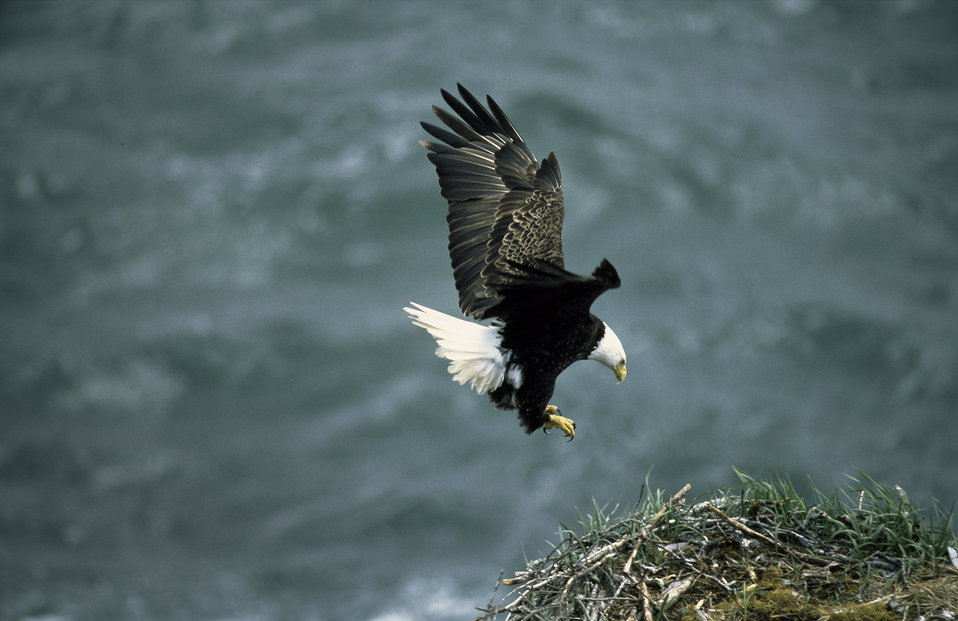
Bald eagle in flight

A Bald Eagle in flight just before landing at the Kodiak National Wildlife Refuge located in Alaska.